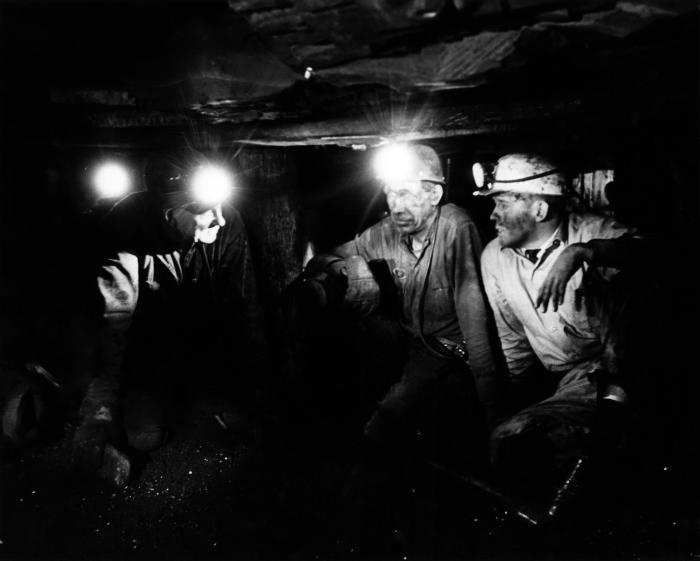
Wearing head-lamps to light their way through this coal mine, this historic image, provided by the Center for Disease Control's (CDC), National Institute for Occupational Safety and Health (NIOSH), depicted three miners as they were strategizing their next move. Note that none of the men was wearing and protective filtered breathing devices, which is now protocol under such circumstances. Mining coal, especially under circumstances such as these close quarters, facilitated coal dust inhalation, thereby, predisposing miners to the long-term negative health effects of this profession such as 'black lung disease', or 'coal-workers' pneumoconiosis' (CWP). Today, the Federal government's stringent regulations on the level of coal dust permissible in the air of a coal mine, and the requisite use of filtered breathing devices, has dramatically lowered the number of cases of black lung disease.